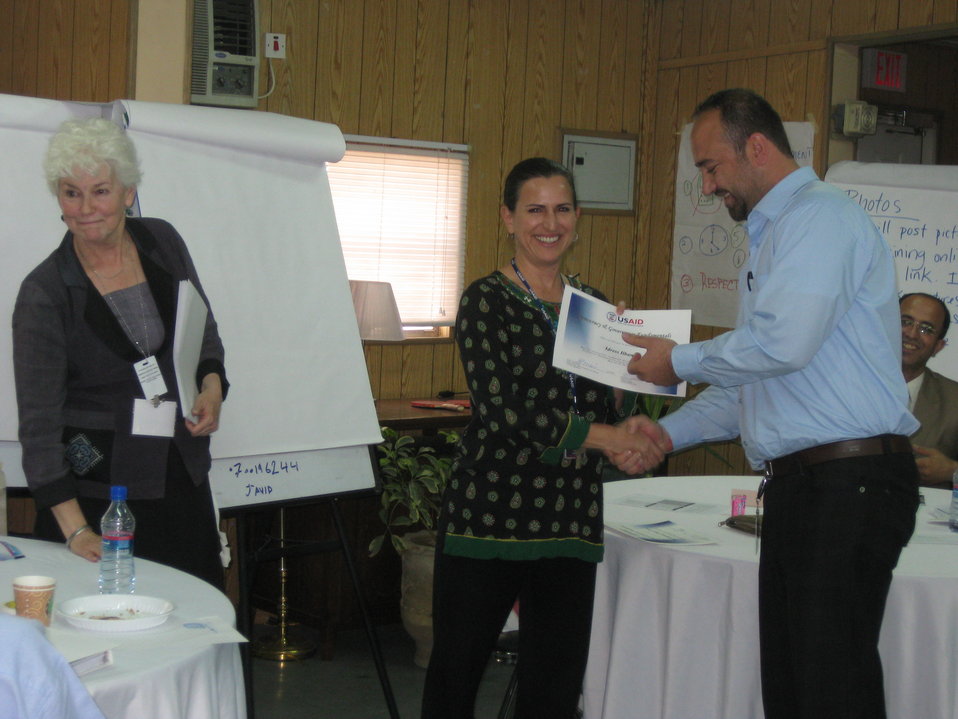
Afghan Youth Voices 066